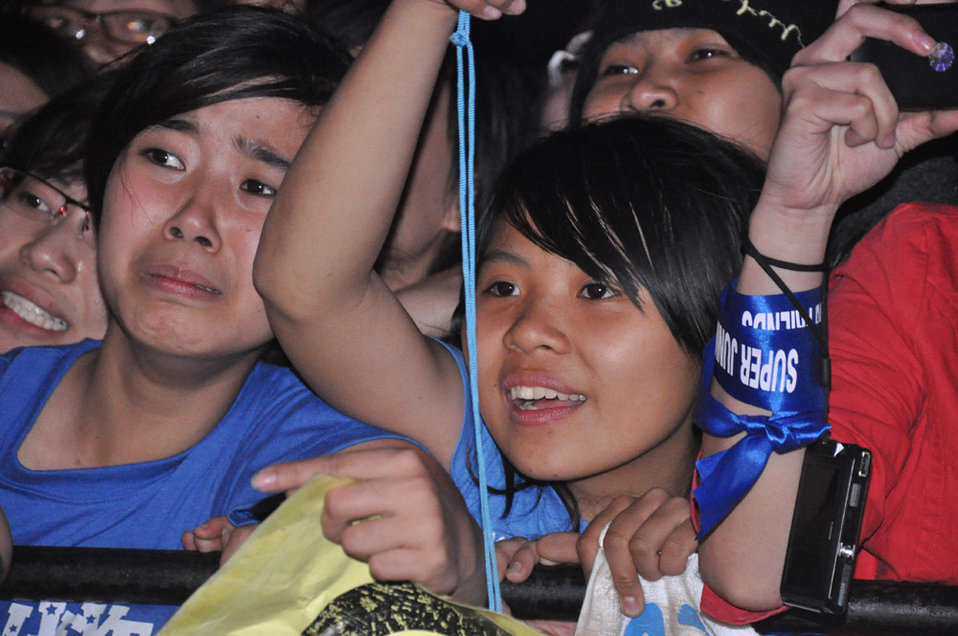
MTV EXIT Hanoi concert March 27, 2010

Super Junior fans press close to see the boyband from Korea.